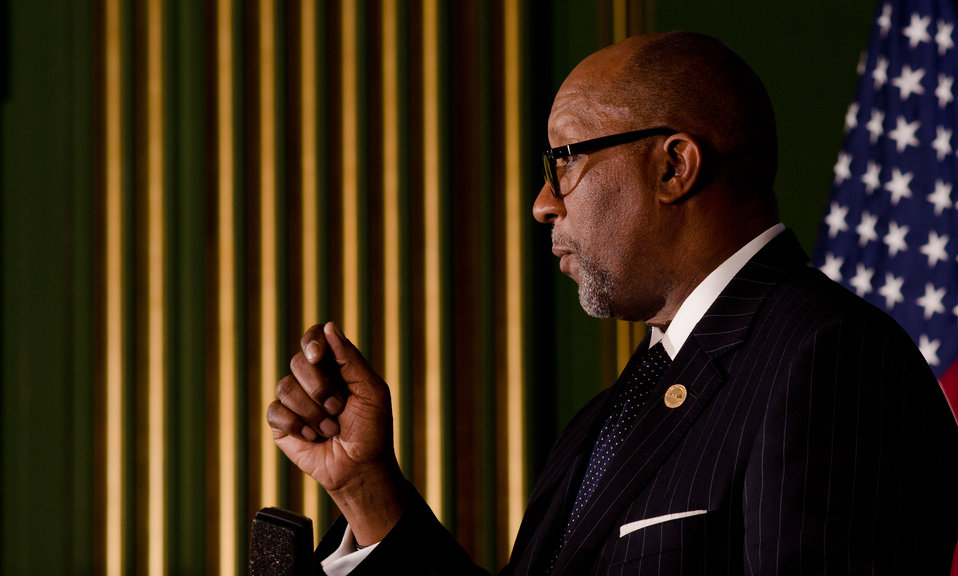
U.S. Trade Representative Ron Kirk responds to a question from international news media journalists at the 23rd Session of the U.S. China Joint Commission on Commerce and Trade (JCCT) at the Andrew W. Mellon Auditorium in Washington, D.C. on Wednesday, Dec. 19, 2012. The JCCT holds high-level plenary meetings on an annual basis to review progress made by working groups that focus on a wide variety of trade issues. These working groups meet throughout the year to address topics such as intellectual property rights, agriculture, pharmaceuticals and medical devices, information technology, tourism, commercial law, environment, and statistics.